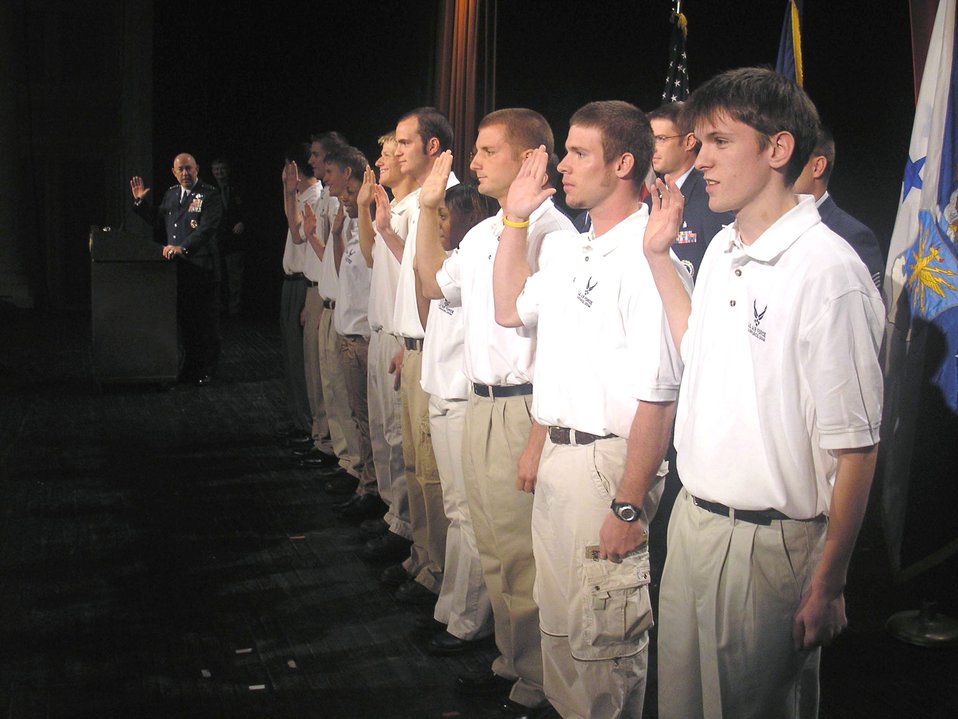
Recruiters, enlistees highlighted at convention

NASHVILLE, Tenn. (AFPN) -- Air Force Chief of Staff Gen. T. Michael Moseley gives recruits the Oath of Enlistment during this year’s Airlift/Tanker Association Convention and Symposium here Oct. 28.